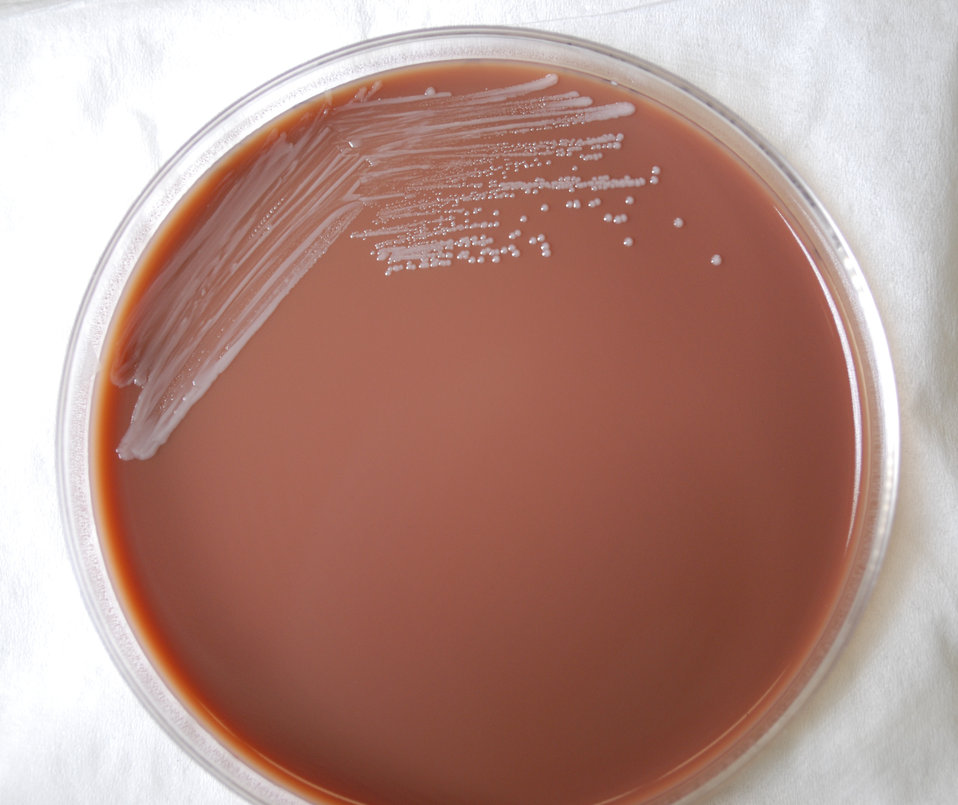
This photograph depicts the colonial morphology displayed by Gram-negative Brucella abortus bacteria, which was grown on a medium of chocolate agar, for a 72 hour time period, at a temperature of 37�C. This Petri dish and its contents were incubated in a CO2 incubator. B. abortus bacteria are known to cause the disease brucellosis. For a closer view of these bacterial colonies, see PHIL 12283.